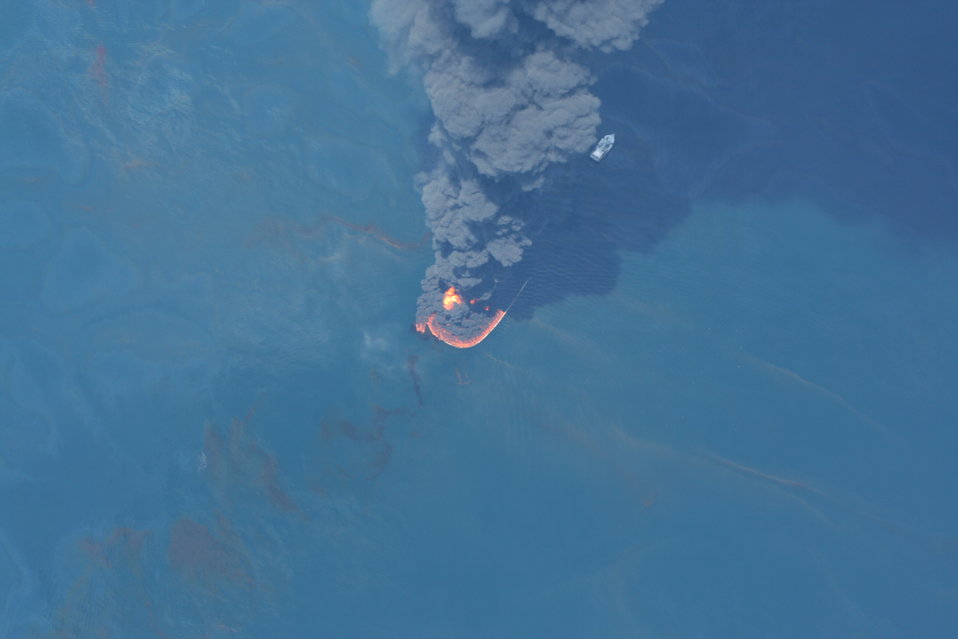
May 6 Open Water Oil Burn

May 6, 2010 - Open-water oil burn

Photo taken from U.S. EPA's Airborne Spectralphotometric Environmental Collection Technology (ASPECT) aircraft.